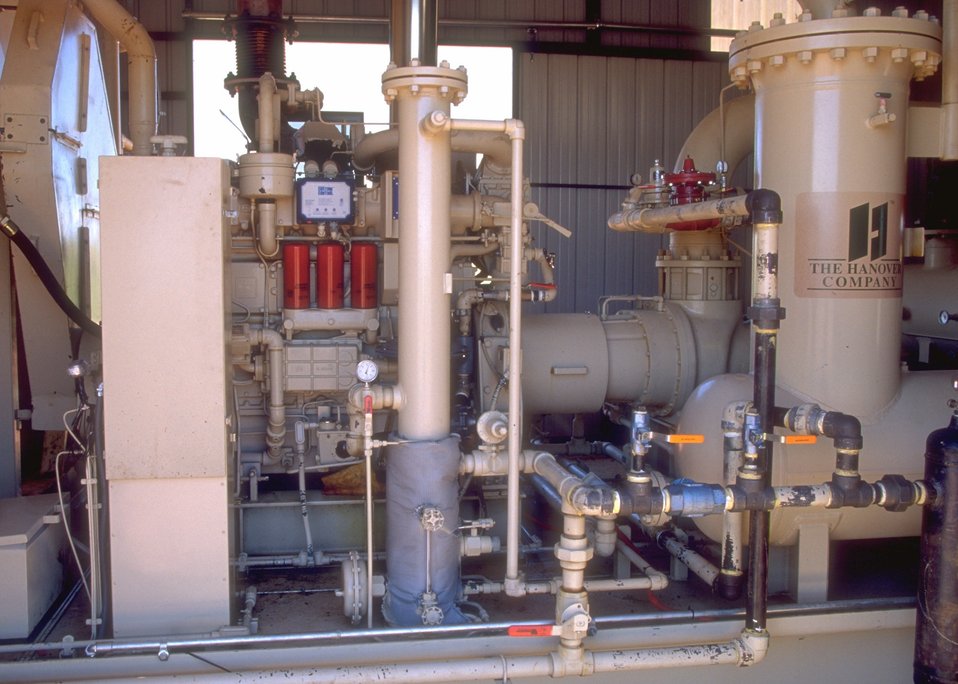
Facilities used in the production of coal bed methane, Buffalo Field Office.